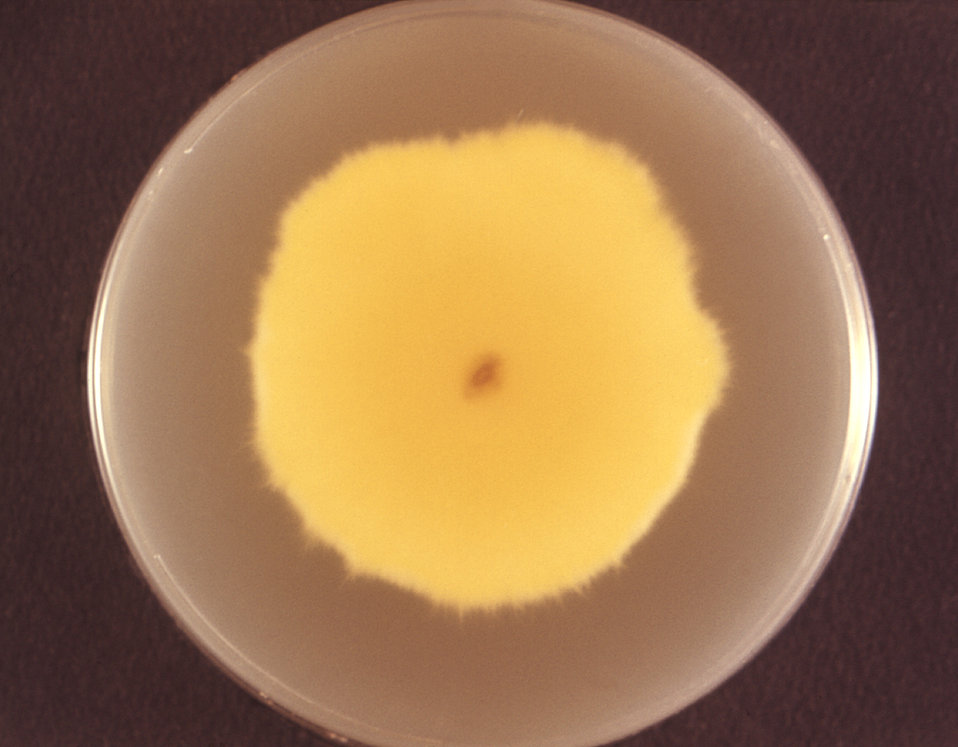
Viewed from the back, i.e., reverse, this image depicted a Petri dish containing Sabouraud's (SAB) dextrose agar, upon which a Microsporum persicolor fungal colony had been cultured. As seen in this reverse view, the colonial coloration can be yellow, or may even be a red-brown. From the front, as depicted in PHIL 10904 and 10906, the colonies can be white, or depending upon the Microsporum sp., may run the gamut, sporting a yellow, beige or cinnamon color, and display a flat, or glabrous, woolly or powdery texture.